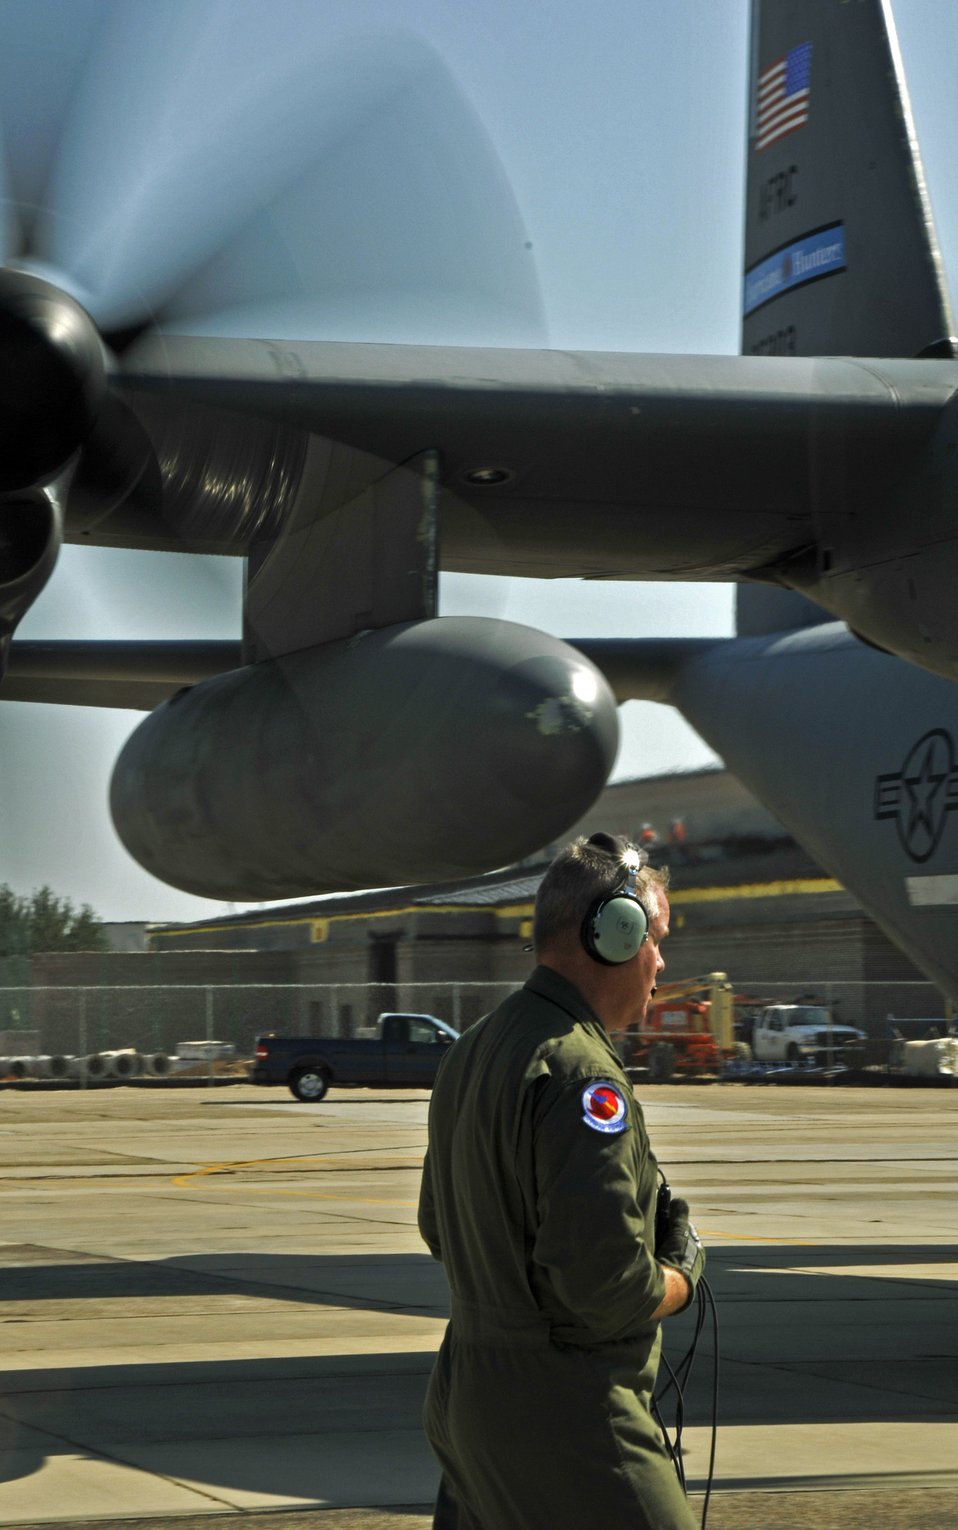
Hurricane Hunters track Ike

Tech. Sgt. Scott Blair prepares to board a WC-130J Hurricane Hunter Sept. 10 at Keesler Air Force Base, Miss. Sergeant Blair is responsible for the safety of the aircraft and is also tasked with launching and gathering weather data through the use of an instrument called a dropsonde. Sergeant Blair is a weather reconnaissance loadmaster.